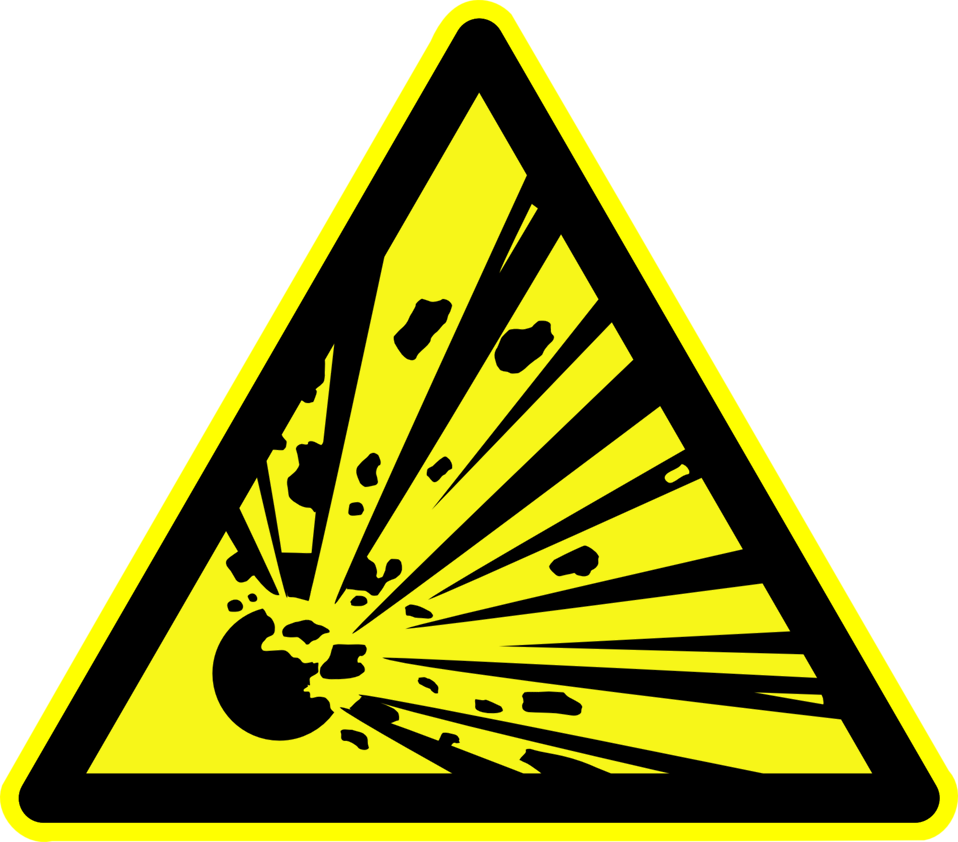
Deutsch: Warnung vor explosionsgefährlichen Stoffen, Warnzeichen D-W002 nach DIN 4844-2 Explosive substances, warning sign D-W002 according to German standard DIN 4844-2